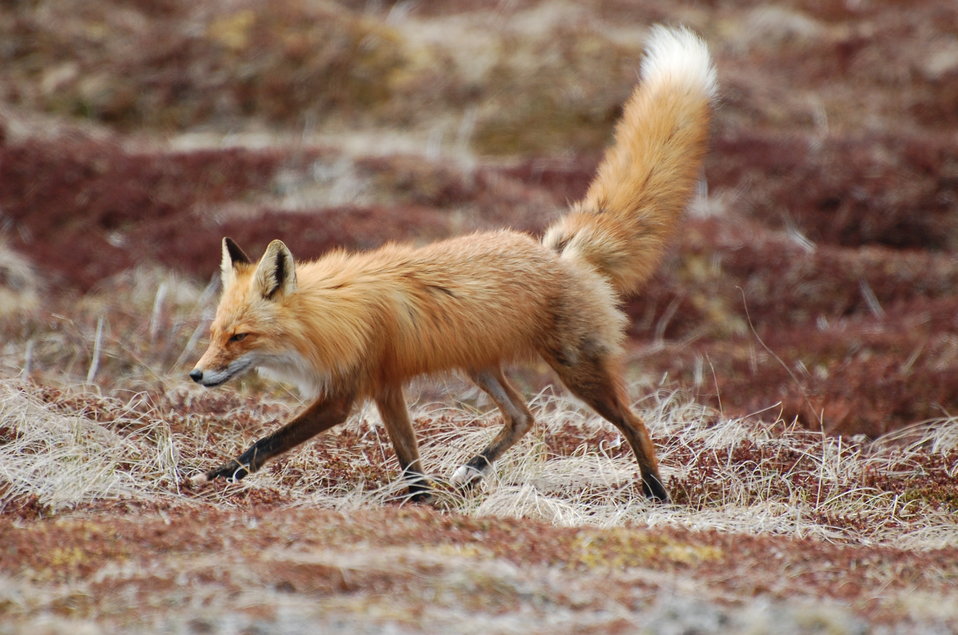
Red Fox

near Kinzarof Lagoon, Izembek National Wildlife Refuge